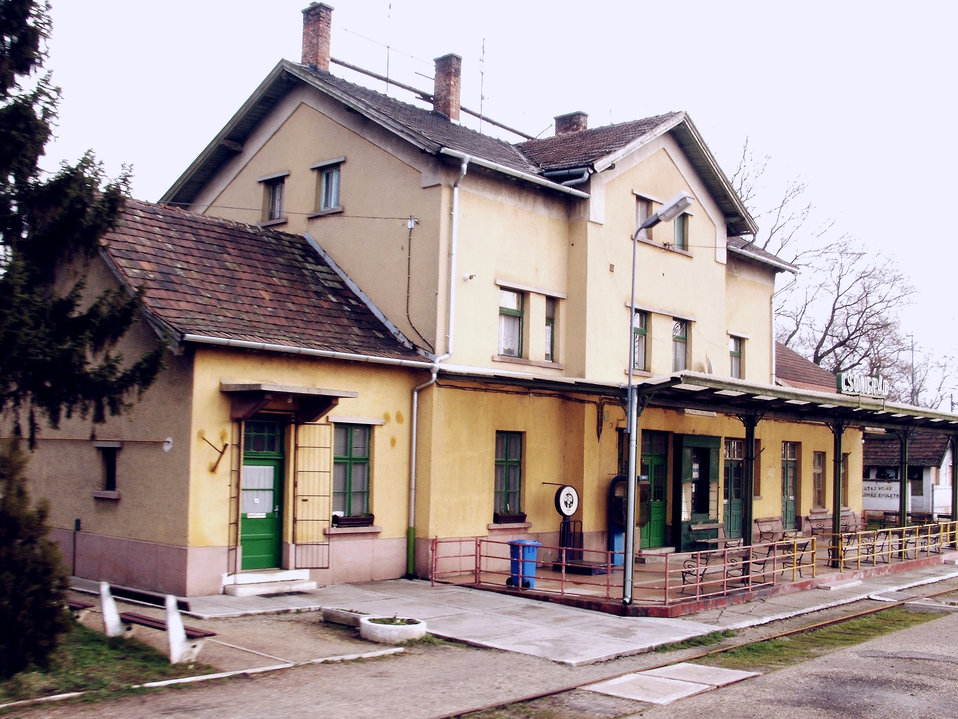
Magyar: A csongrádi vasútállomás.